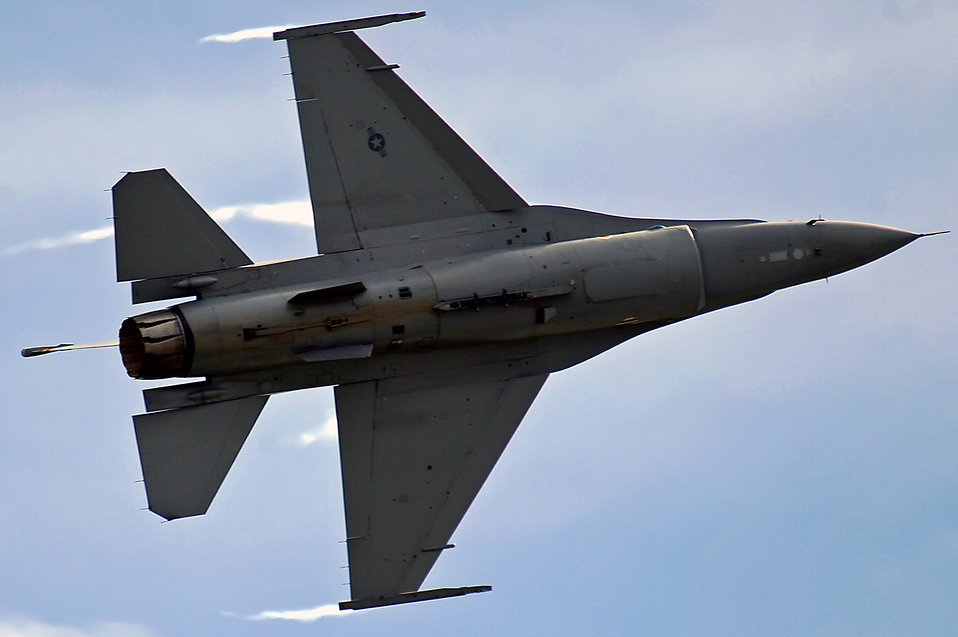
2011 Dakota Thunder air show

An F-16 Fighting Falcon flies June 4, 2011, during the 2011 Dakota Thunder air show at Ellsworth Air Force Base, S.D.